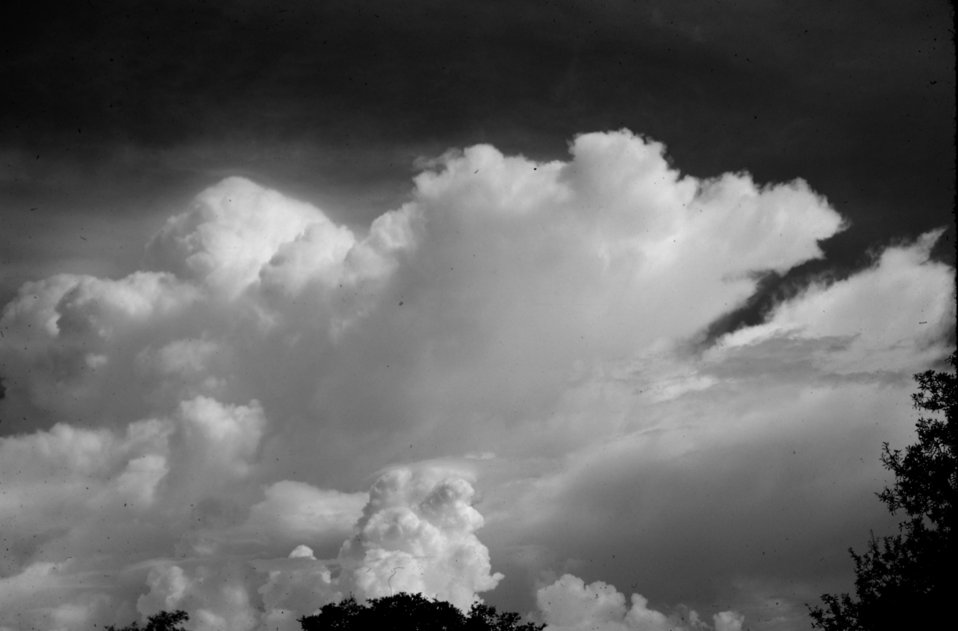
Cumulonimbus.